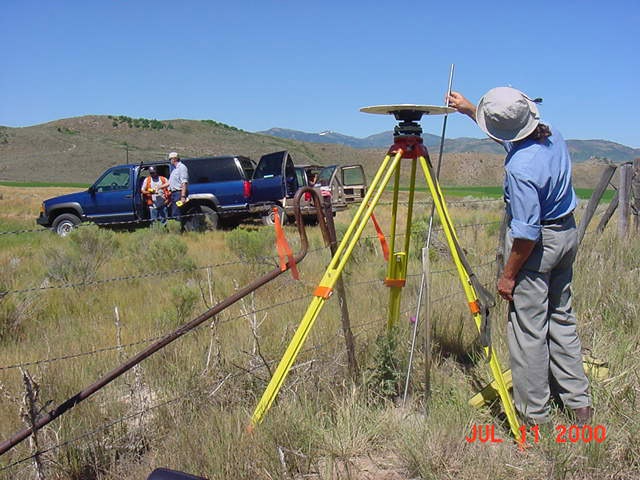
Cadastral Surveys Idaho Bureau of Land Management